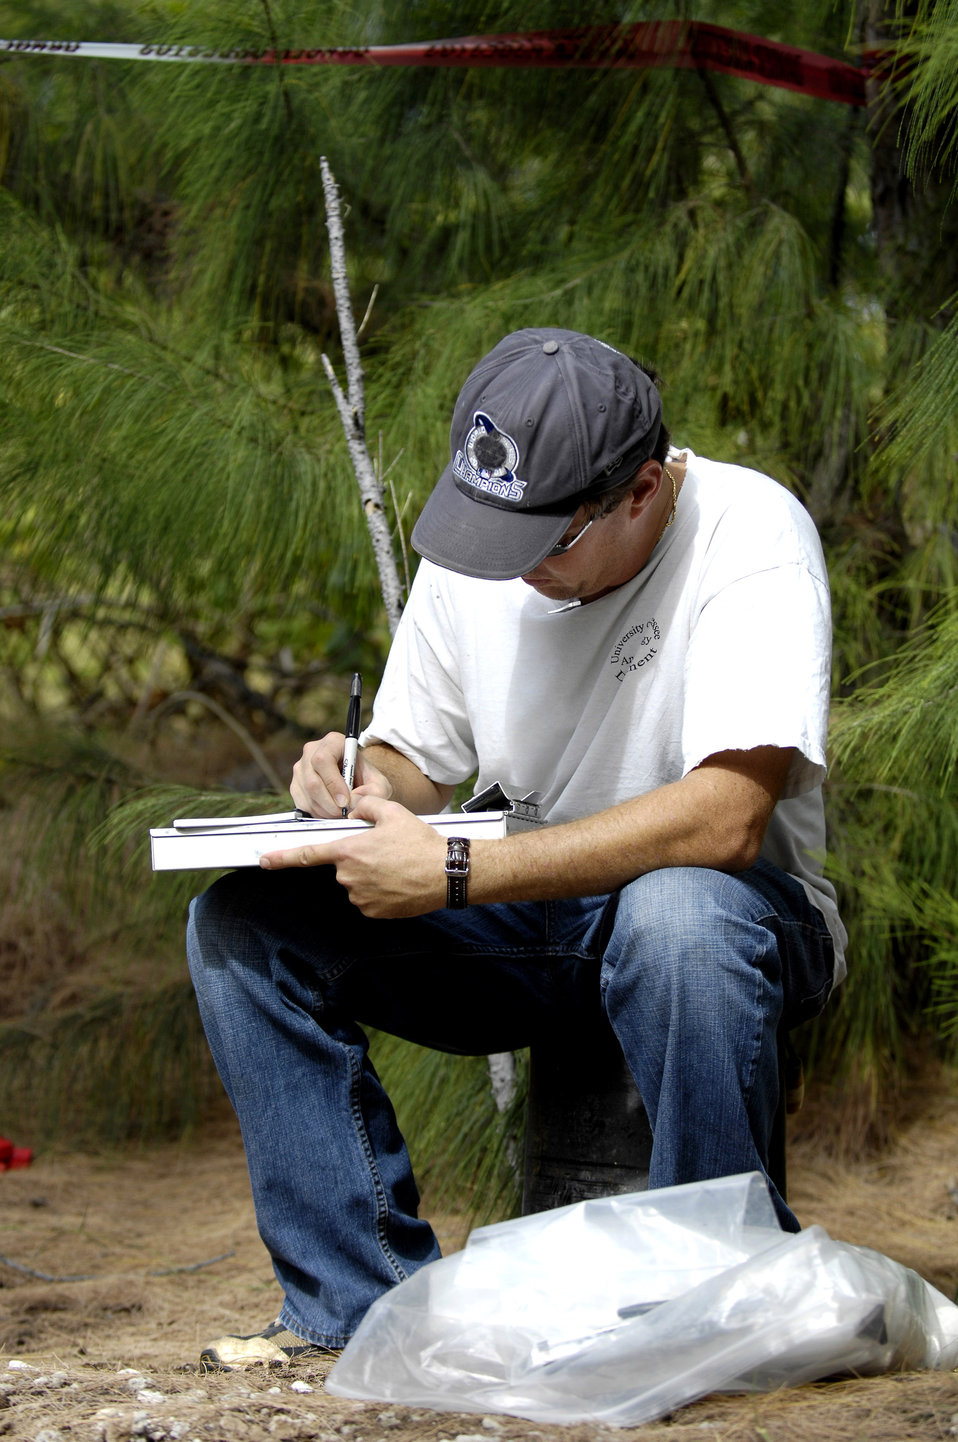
Servicemembers search for POW/MIAs on Wake Island

Greg Berg documents a dig site Jan. 12 on Wake Island. Mr. Berg, a forensic anthropologist, was sent to do a site survey after Wake Island officials notified The Joint POW/MIA Accounting Command of bones located on the island. JPAC officials are charged with achieving the fullest possible accounting of all Americans missing as a result of past conflicts.